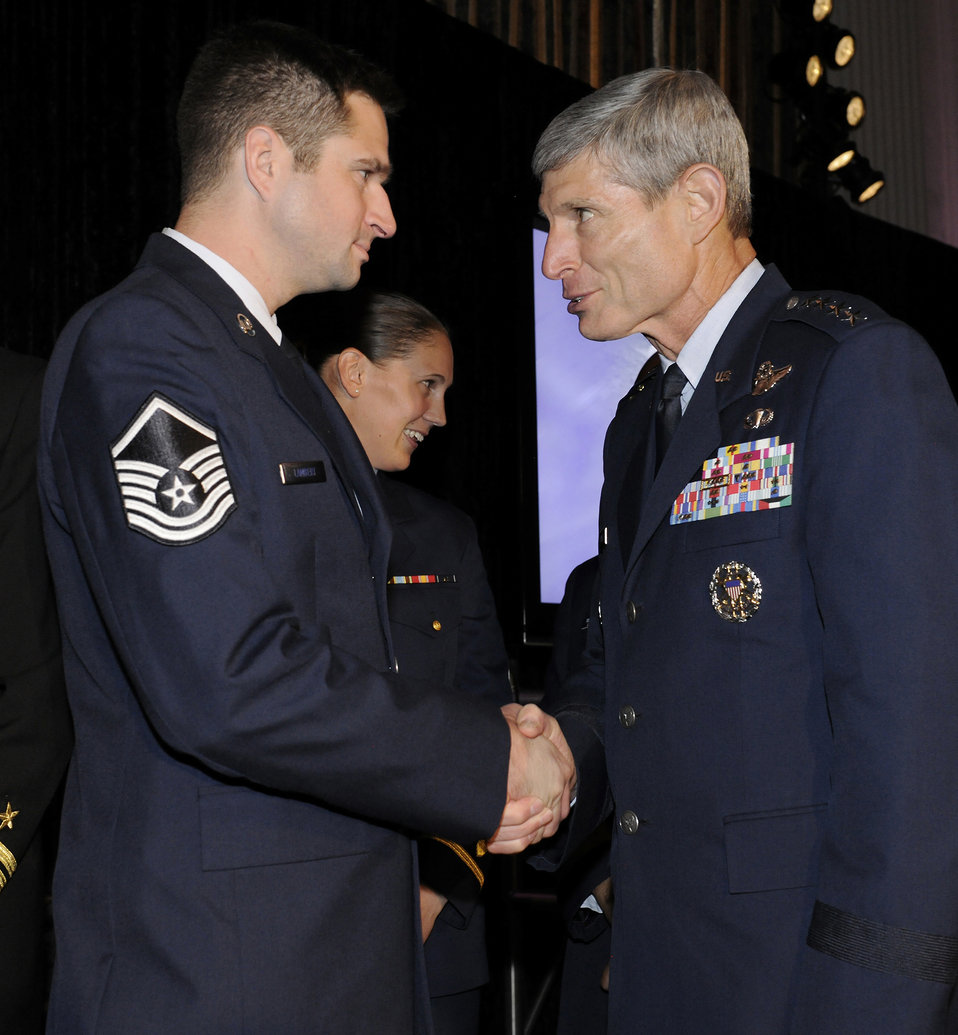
Times Airman of the Year

Air Force Chief of Staff Gen. Norton Schwartz congratulates Master Sgt. Brandon Lambert of the 728th Air Control Squadron, Eglin Air Force Base, Fla., on his selection as the 2012 Air Force Times Airman of the Year during the 2012 Military Times’ Service Members of the Year Awards awards ceremony July 19, 2012, in Washington, D.C.